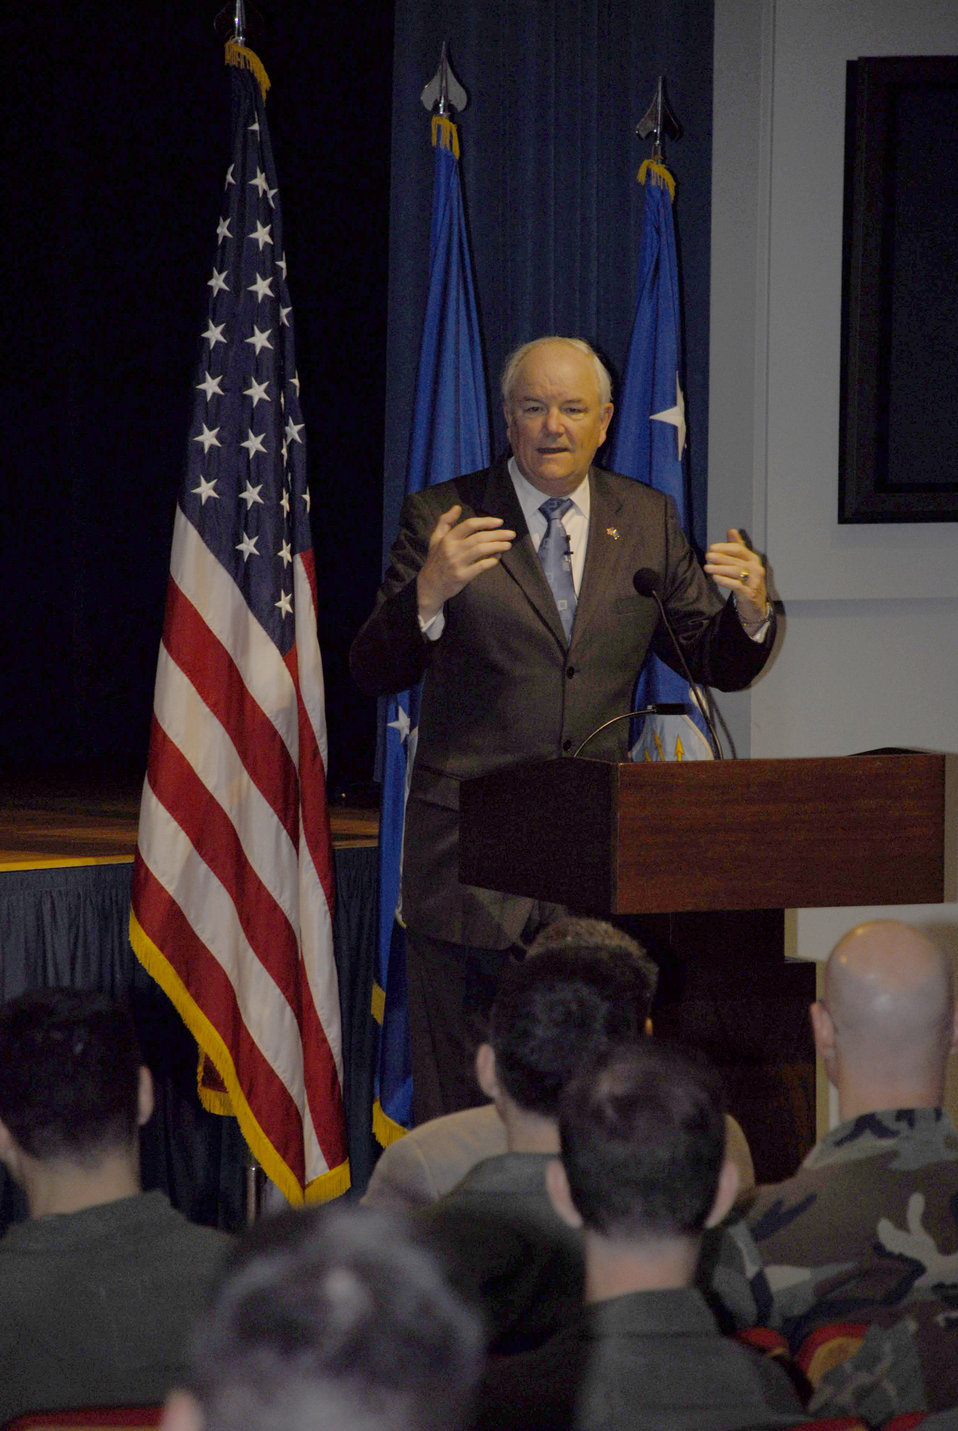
Secretary encourages Airmen to be 'agents of change'

Secretary of the Air Force Michael W. Wynne addresses a crowd of Airmen during an Air Staff Call May 22 at the Pentagon. The Secretary held the call to encourage Airmen who have served on the Air Staff to carry their knowledge and expertise of Air Force policy to their follow-on assignments in the field.